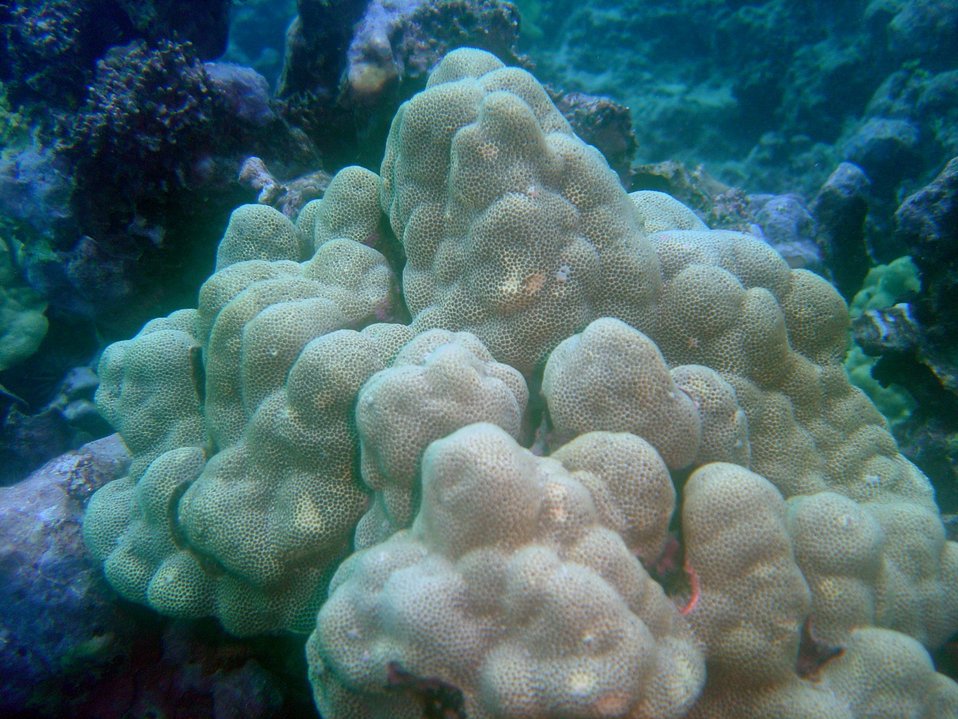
Coral